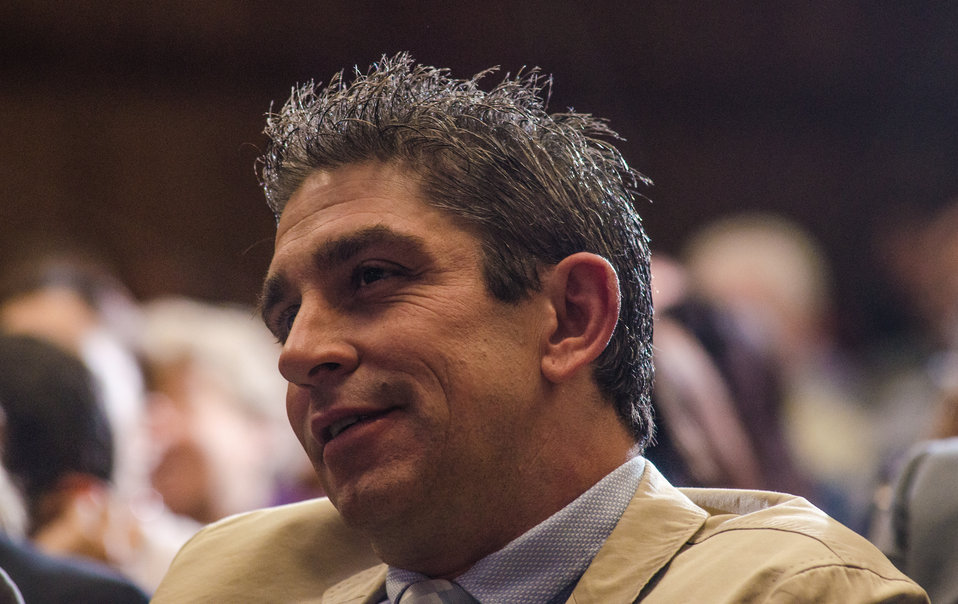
Keynote Speaker Poet Richard Blanco talks about differences in culture, language, and his childhood,at the 2013 National Hispanic Heritage Month ”Hispanics: Serving and Leading our Nation with Pride and Honor,” on Thursday, Sept. 19, 2013, in the Jefferson Auditorium, USDA Headquarters, Washington, D.C. Mr. Blanco stands as the youngest, first Latino, and first openly gay person to serve as the Presidential inaugural poet, on January 21 of this year.